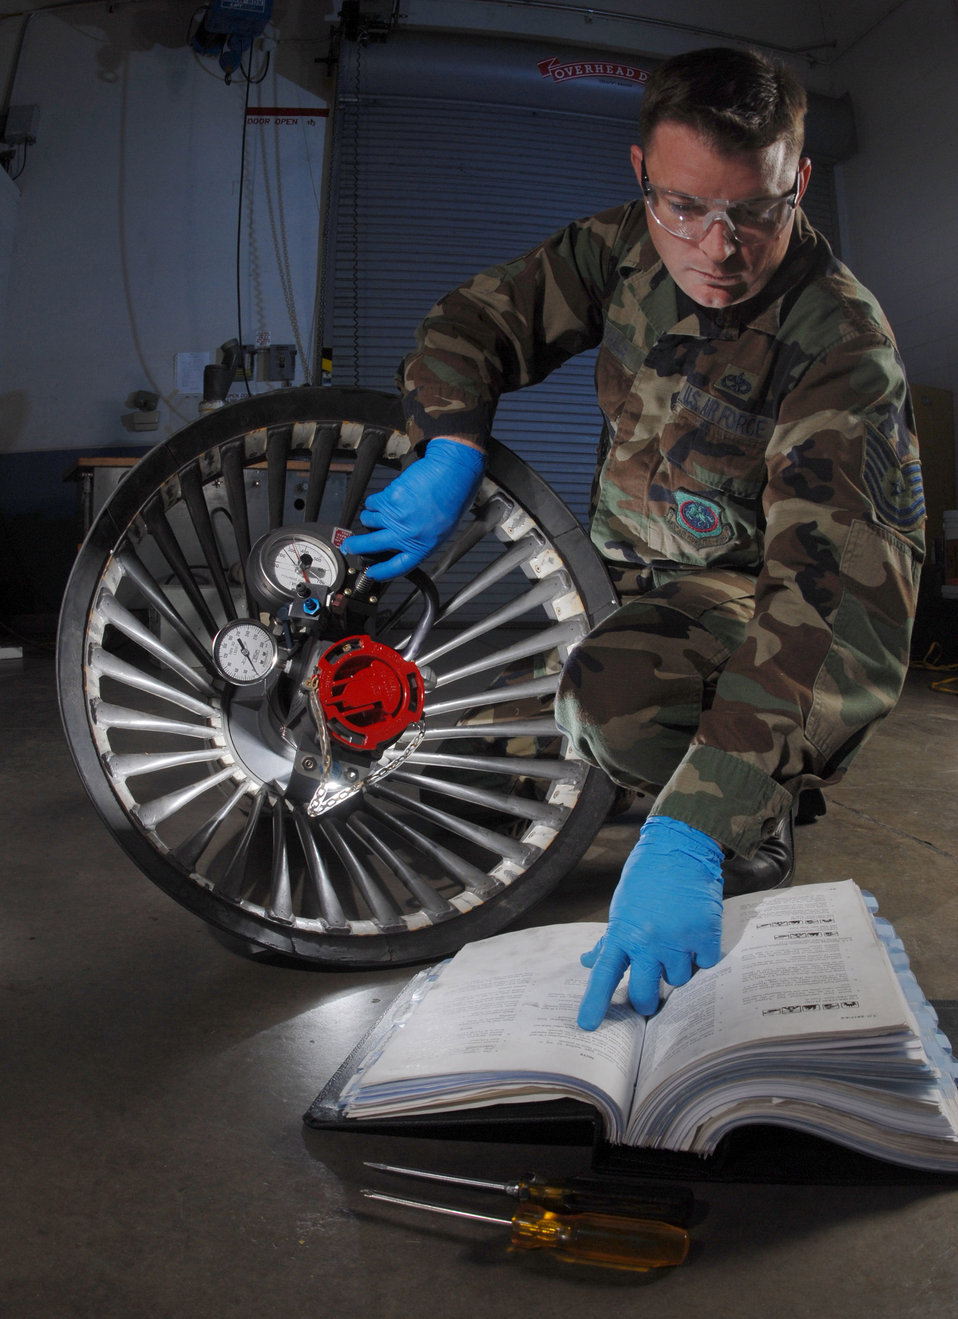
Refueler maintenance

Tech. Sgt. Christopher Walls uses a breakaway force tester March 25 on a KC-135 Stratotanker aerial refueling drogue. He is with the 452nd Maintenance Squadron's aircraft pneudraulics systems shop at March Air Reserve Base, Calif. March ARB, located in Southern California, is home to the largest air mobility wing in the Air Force Reserve Command.